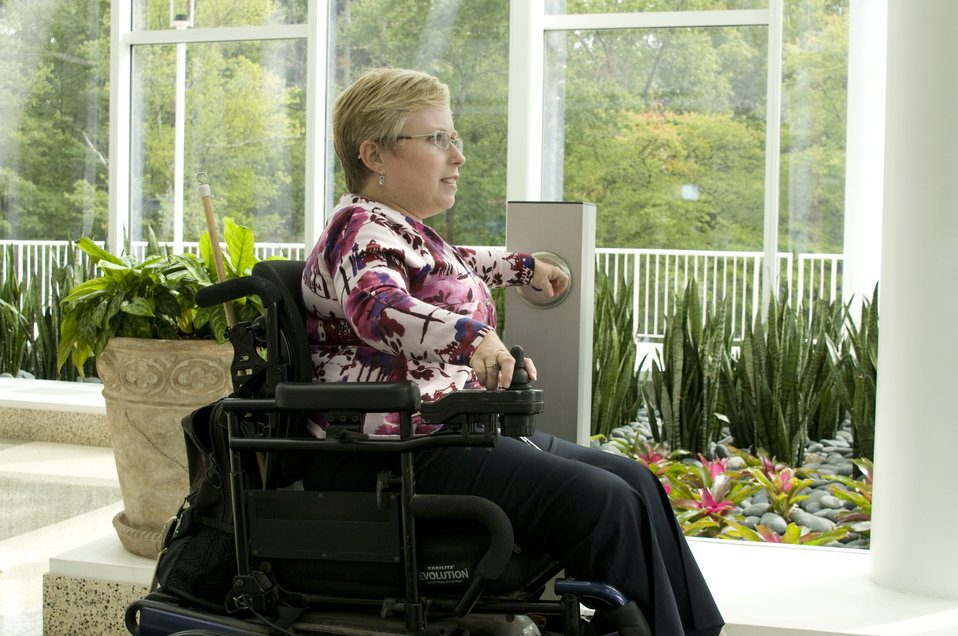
Seated in her wheelchair, the woman pictured here had completed her activities at one of the Centers for Disease Control's (CDC) campuses in Atlanta, Georgia, and was in the process of exiting a building, using her left hand to press the easily-accessible, push-button pad door opener.